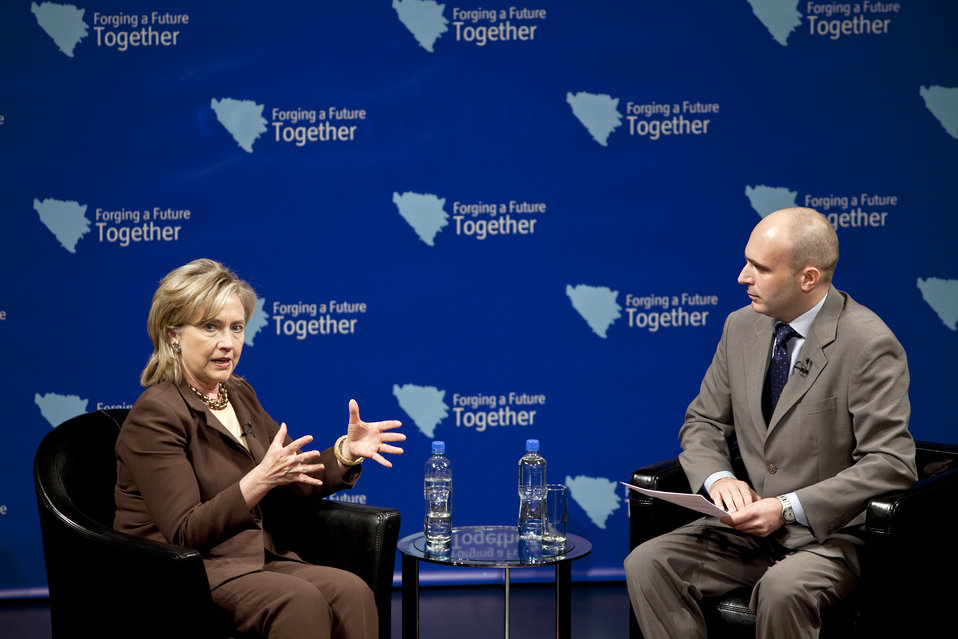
Secretary Clinton Participates in a Town Hall

U.S. Secretary of State Hillary Rodham Clinton participates in a town hall meeting with university students and civil society representatives, at the National Theater, in Sarajevo, Bosnia and Herzegovina, on October 12, 2010.